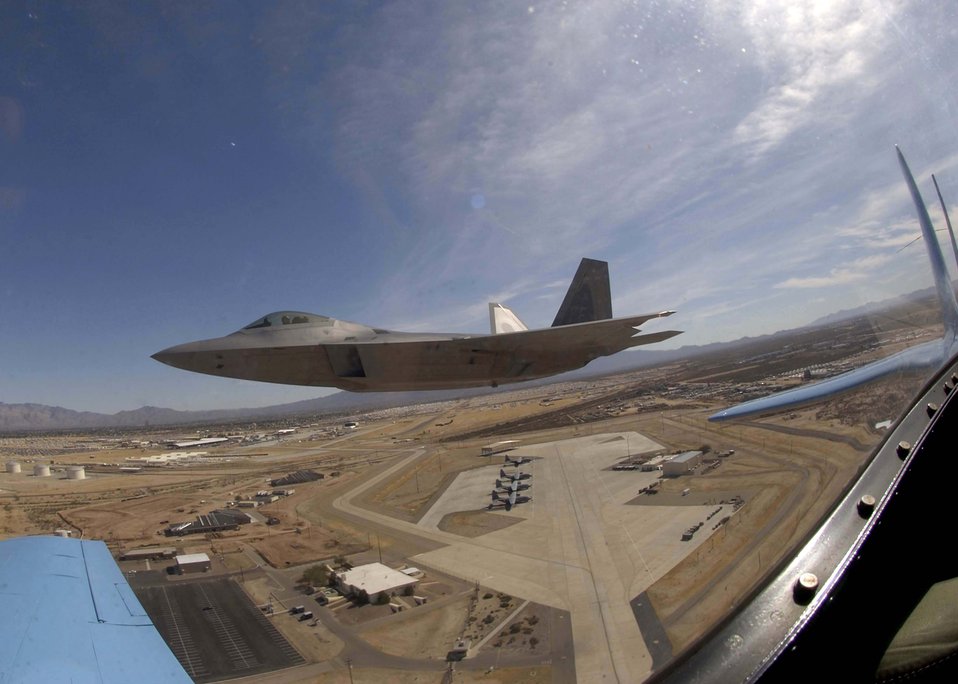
Heritage flight

An F-22A Raptor from Langley Air Force Base, Va., flies in formation along with a P-51 Mustang over Davis-Monthan Air Force Base, Ariz., Sunday March 5, 2006, during the 2006 Heritage Conference. The conference combines different U.S. aircraft from more than 60 years of aviation history to ensure certification in performing air shows worldwide.